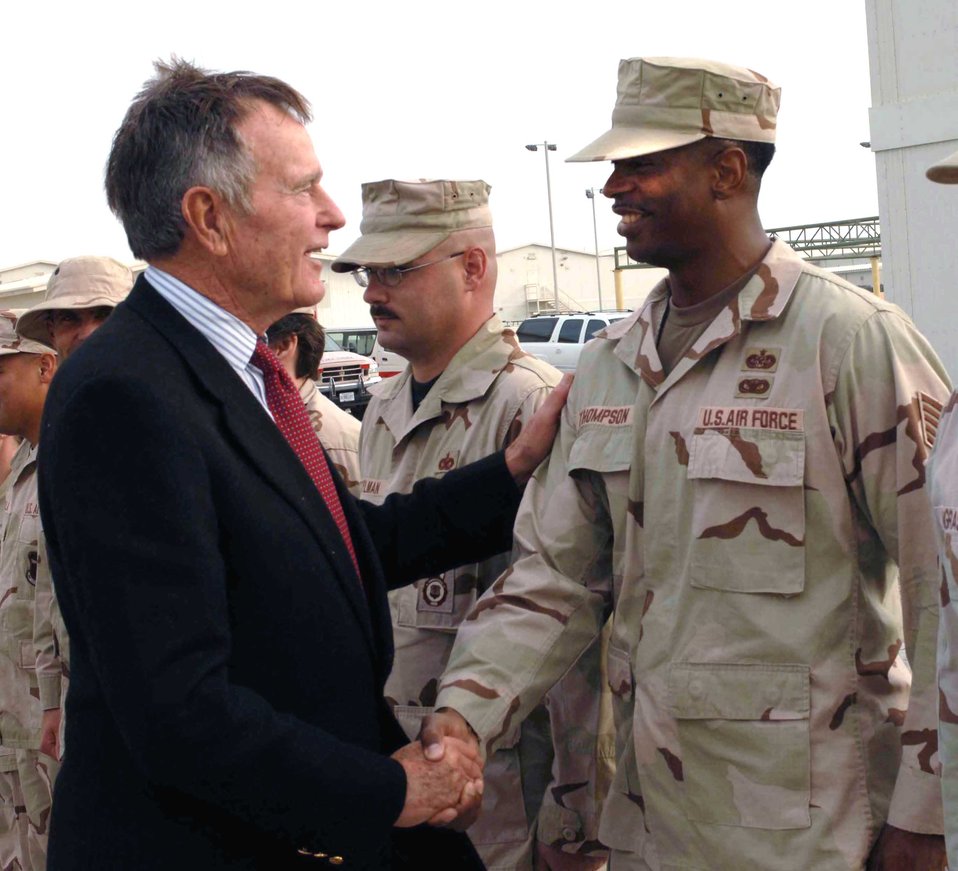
Former president visits Airmen

Former President of the United States George H.W. Bush shakes hands with Tech. Sgt. Ernest Thompson during a visit Nov. 20 to Southwest Asia. President Bush stopped by the 380th Air Expeditionary Wing to listen to a mission briefing and meet the Airmen assigned here. Sergeant Thompson a paralegal assigned to the 380th Air Expeditionary Wing.